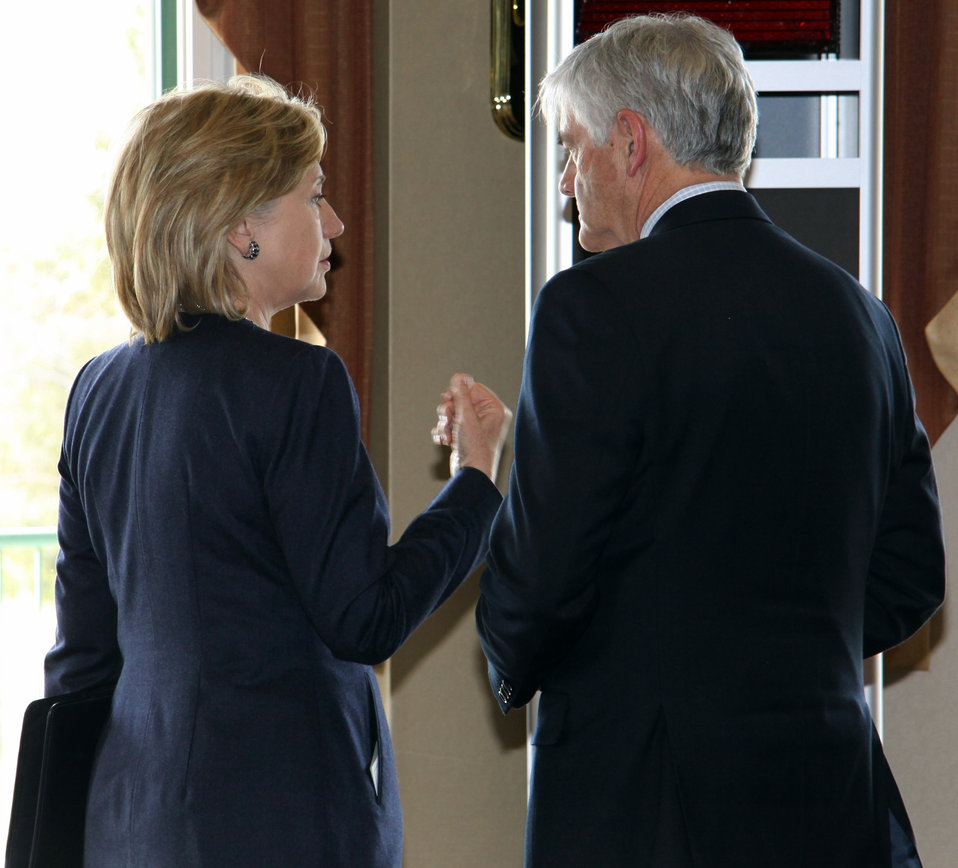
Secretary Clinton Meets With Canadian Foreign Minister

U.S. Secretary of State Hillary Rodham Clinton with Canadian Foreign Minister Lawrence Cannon during the G8 Foreign Ministers Meeting in Ottawa, Canada March 29, 2010.